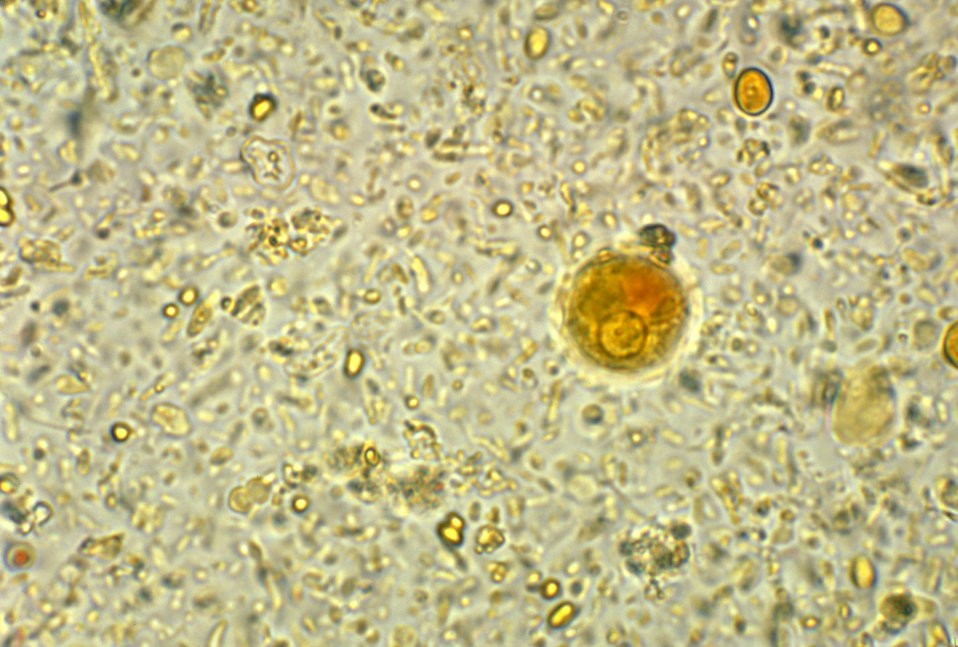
This photomicrograph depicts a cyst of an Entamoeba histolytica amoebic parasite, displaying a visible glycogen mass.